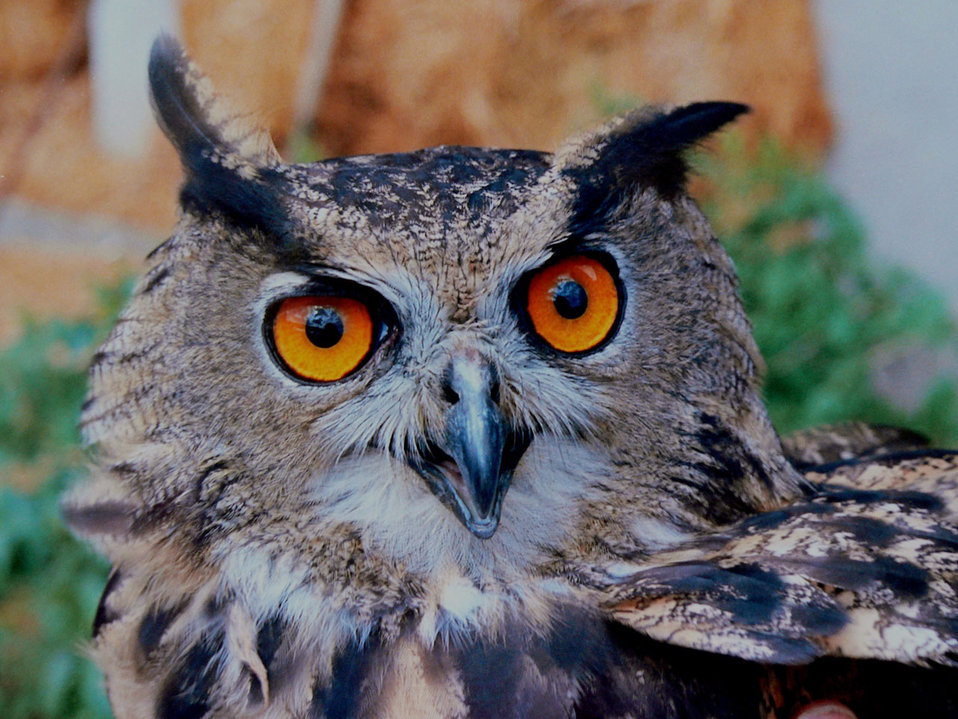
Grand duke

The eagle owl (bubo bubo).